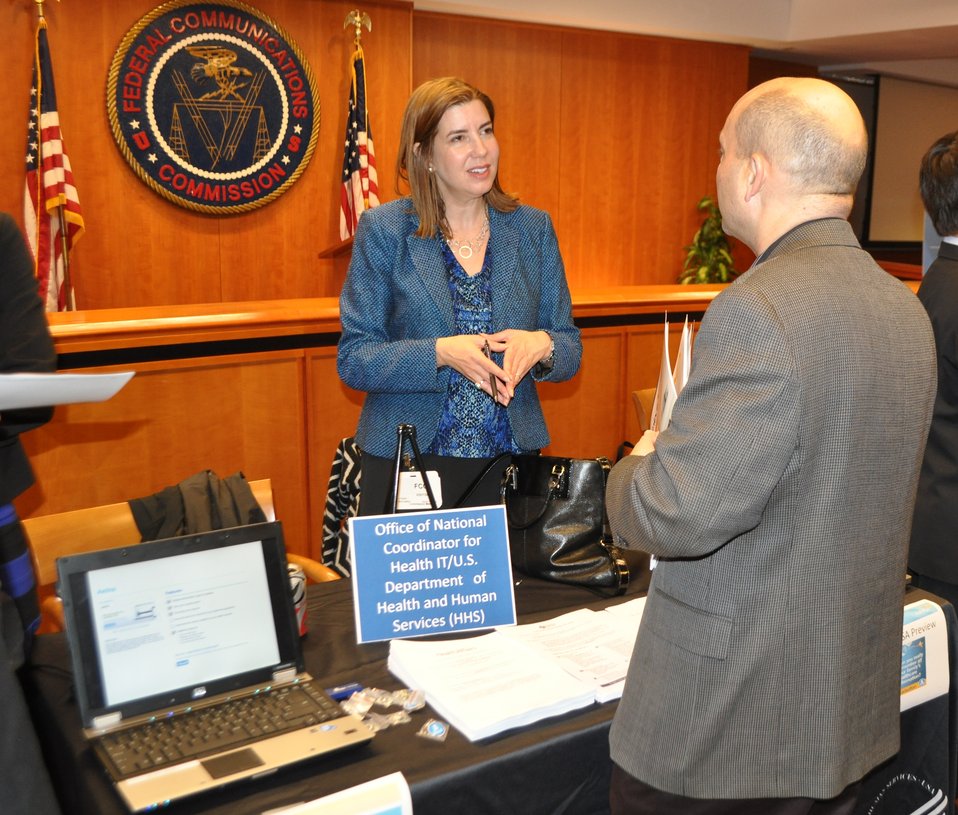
12.6.13 mHealth Innovation Expo

FCC mHealth Innovation Expo.